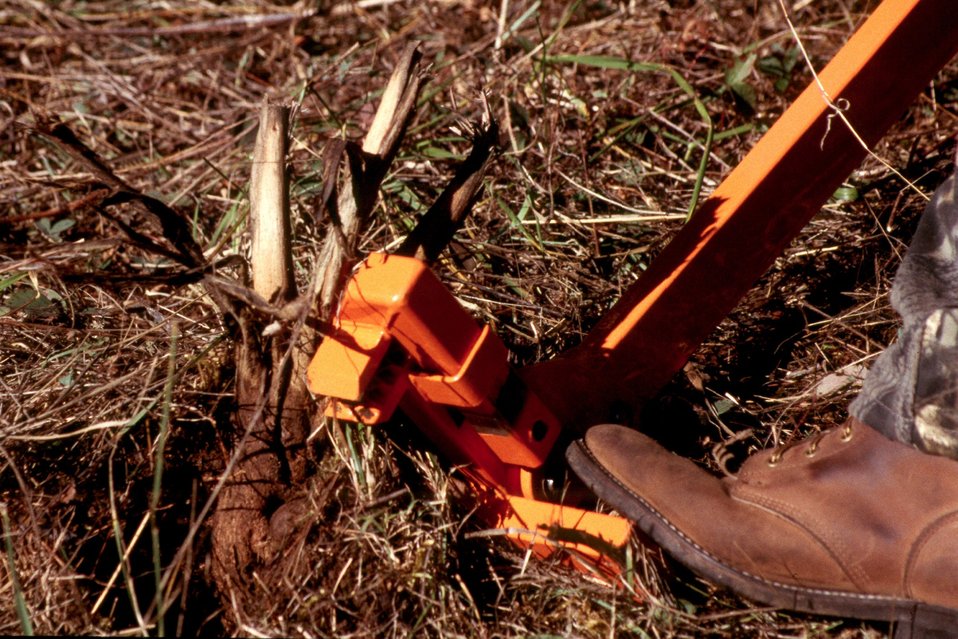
An effective technique to pulling scotch broom roots